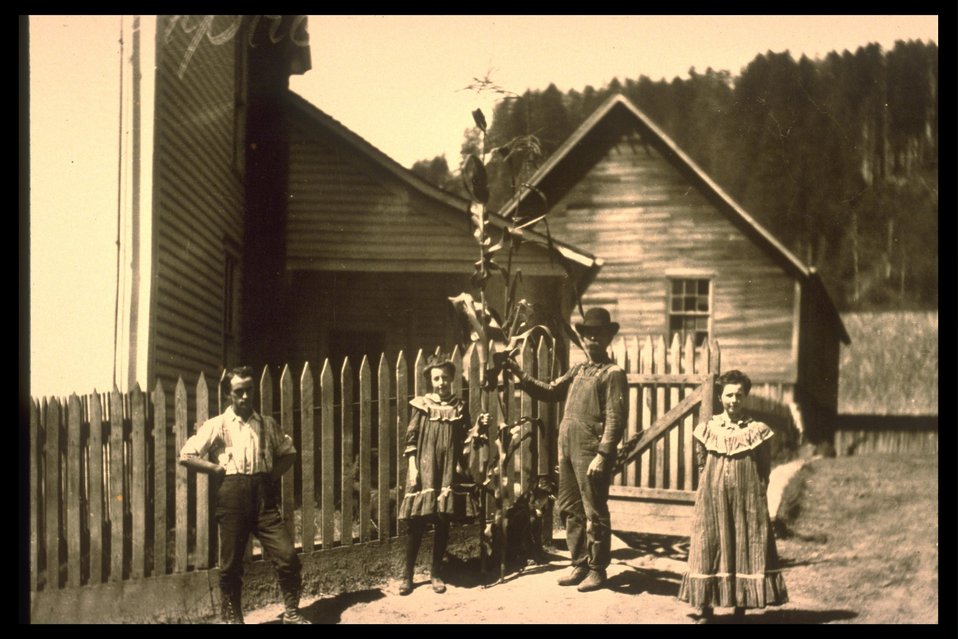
Black and White photo of a pioneer family standing in front of their home. Man is holding onto a stalk of corn.